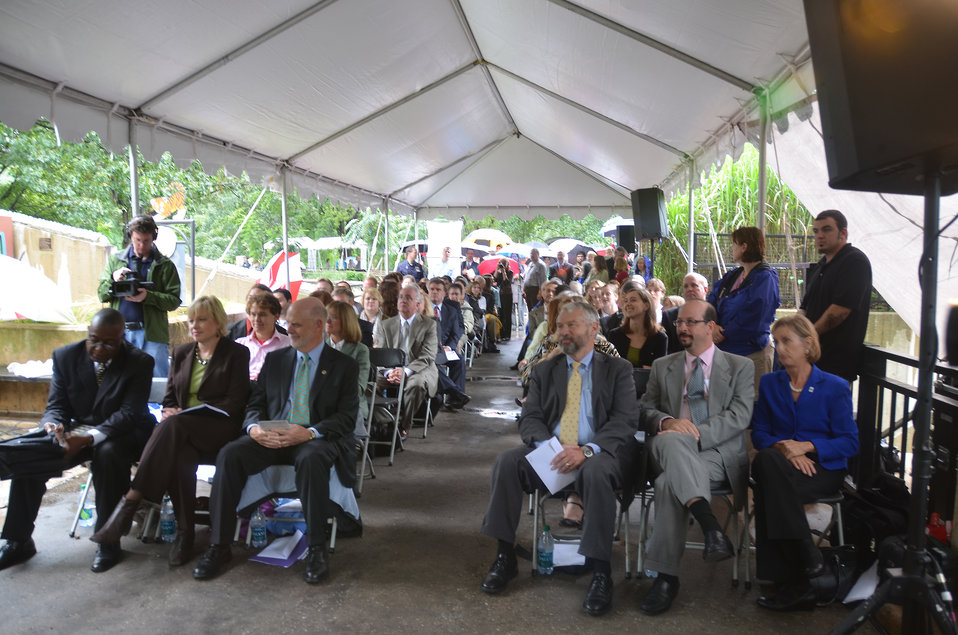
Save Vanishing Species Stamp First Day of Issue